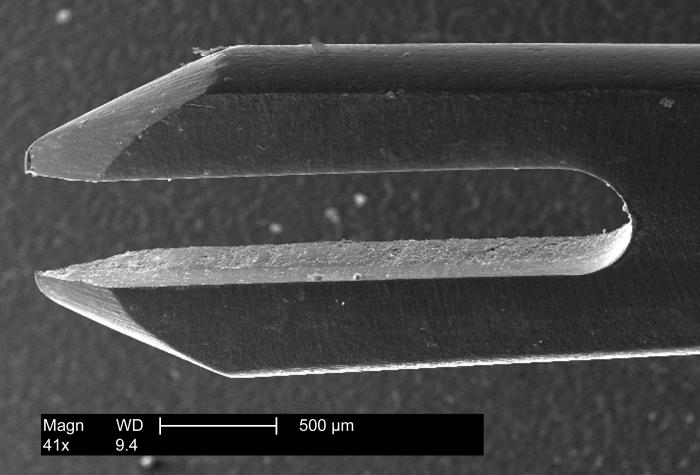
This scanning electron micrograph (SEM) reveals the roughened surface at the tip of a 'bifurcated' smallpox vaccination needle.